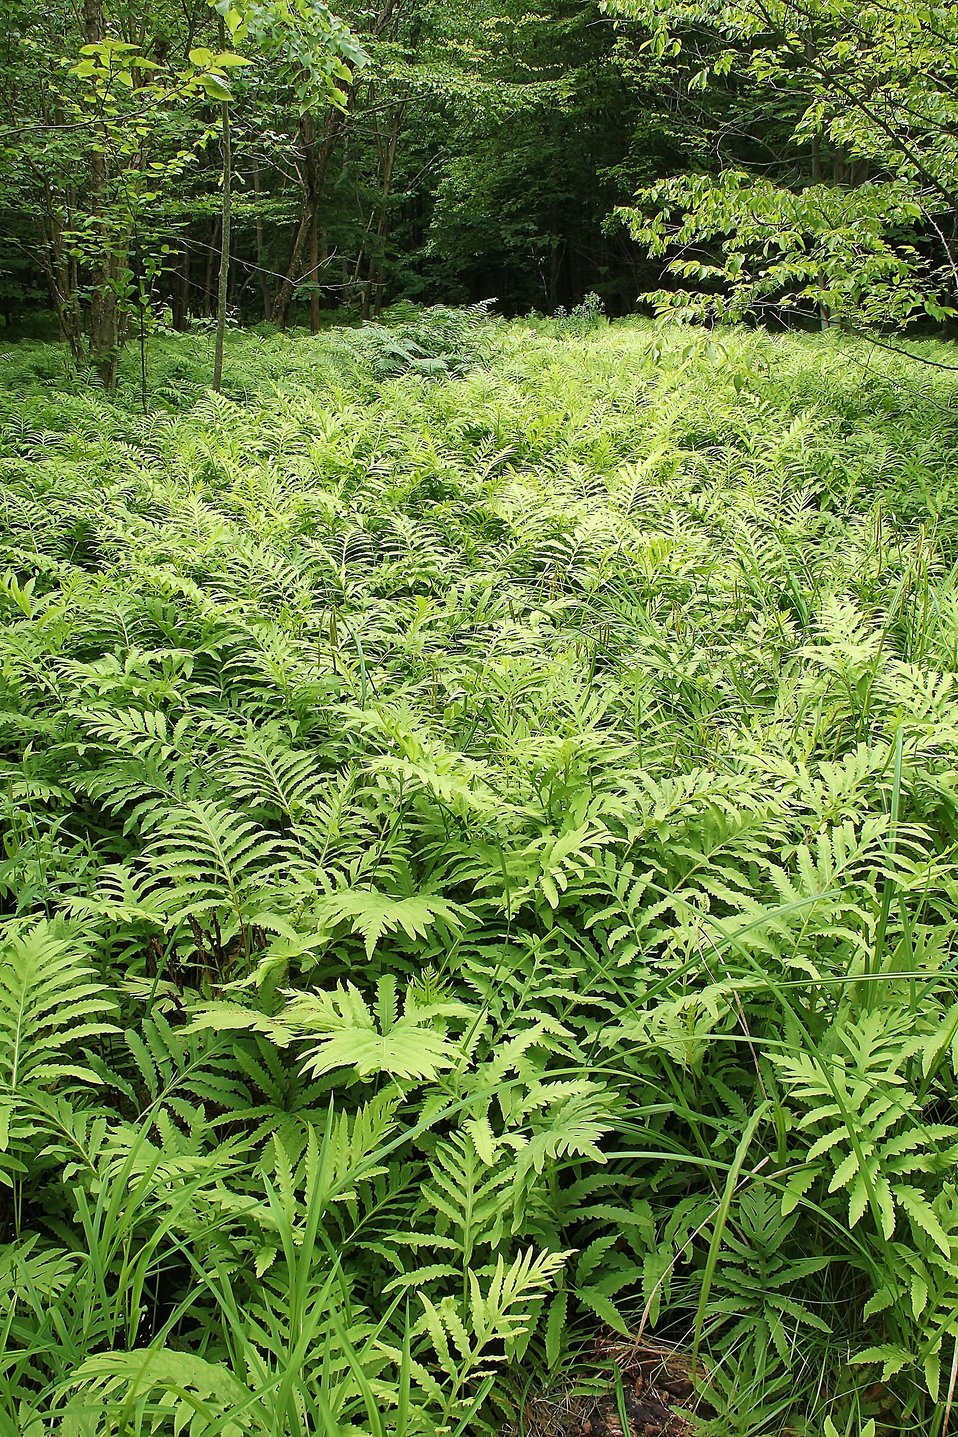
Fern Glade

Missisquoi National Wildlife Refuge Fern Glade